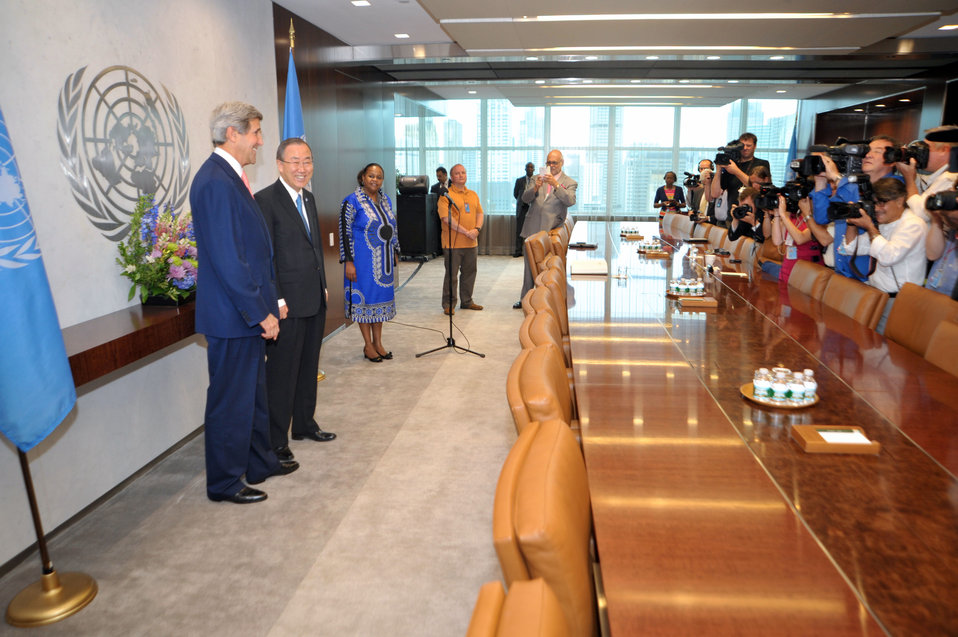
Secretary Kerry and UN Secretary General Ban Ki-moon Address Reporters

U.S. Secretary of State John Kerry, joined by United Nations Secretary General Ban Ki-moon, speaks to reporters before their meeting at the UN headquarters in New York City on July 25, 2013.